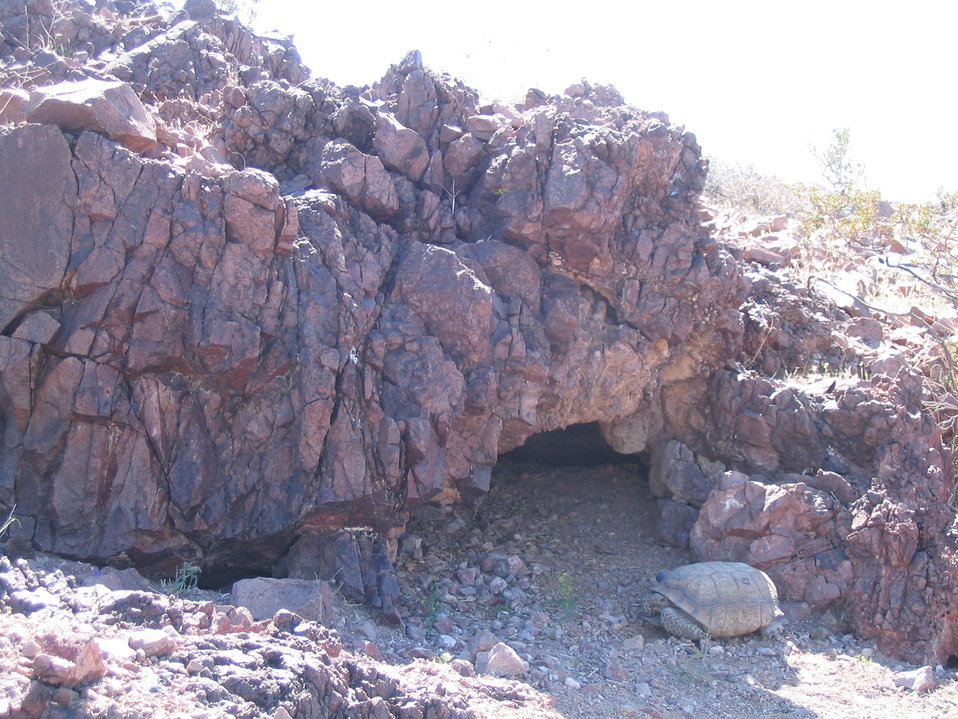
Mojave Desert Tortoise (Gopherus agassizii)

Desert tortoise (Gopherus agassizii) commonly known as the Mojave desert tortoise.